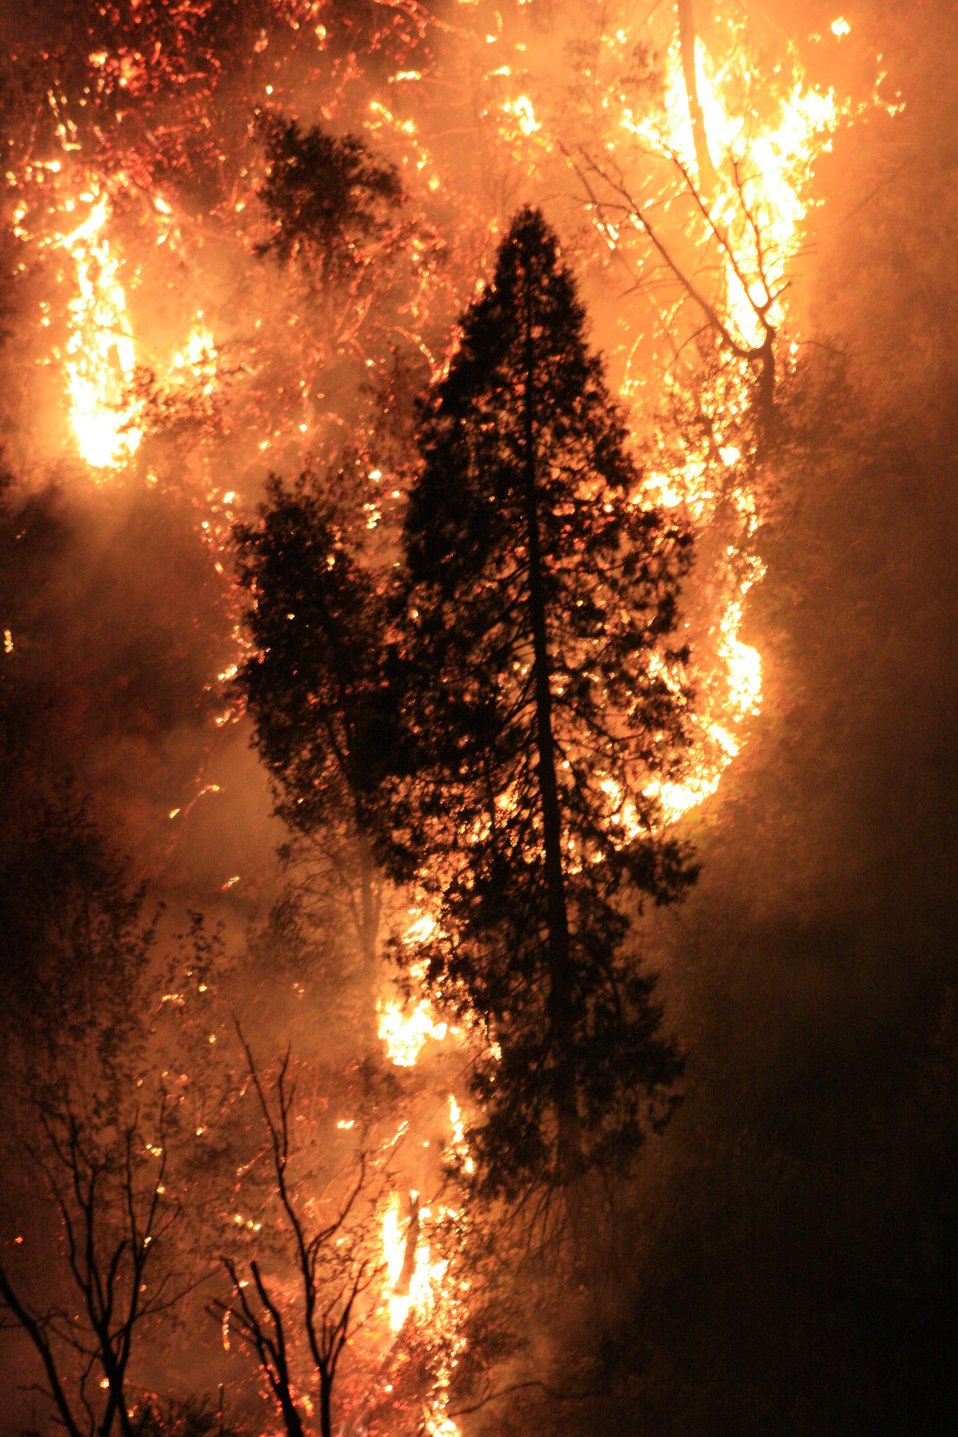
The Rim Fire in the Stanislaus National Forest near in California began on Aug. 17, 2013 and is under investigation. The fire has consumed approximately 149, 780 acres and is 15% contained.